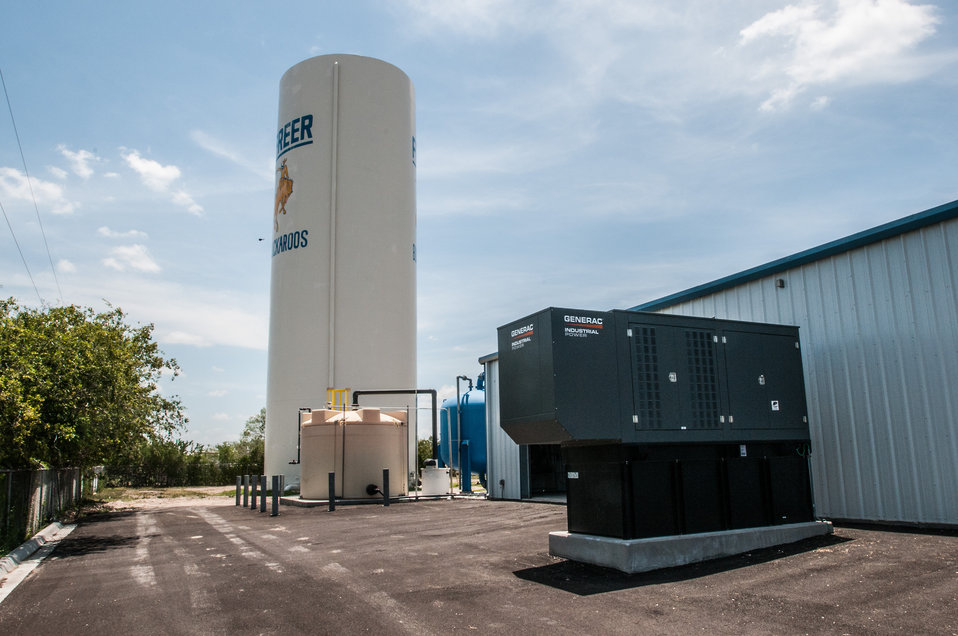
Water holding tank (left-right), hydrogen chloride tank (to balance Ph levels), arsenic removal absorber vessel, and generator, at the Freer Water Control and Improvement District Arsenic Removal System Site, on Tuesday, June 18, 2013, in Freer, Texas.
Although, the naturally occurring arsenic levels have remained constant for more than a century, the Environmental Protection Agency (EPA) safe level standards have established lower levels of arsenic to be safe for human consumption. To meet those levels FWCID approached USDA and was awarded a $986,000 loan for Phase I, to install two new water wells, each rated at 167 gallons per minute (creating a total of eight wells); 13,600 feet of well collection lines; and 15,000 linear feet of well control line to remotely control the well pumps and the 1,000,000 gallon holding tank at the well facility, which supplies water to the new Arsenic Removal System (Phase II). Previously, water was manually controlled by personnel who knew when and how long to manually opened and closed water valves or started well pumps to ensure holding tank levels were within operating levels during peek and slack times of the day. Phase II was a combination of a $1,832,000 loan and a $1,258,750 grant, which provided for the customized arsenic removal system, seen in these photos. The system includes a new 3,530 sp. ft. facility, on a .76-acre site, and houses the operations room, computer and power system, laboratory room, and pump systems. The entire operation can be monitored through a desktop computer interface system. The computer-controlled system ensures raw water is fed to the arsenic removal pump system, which works in sequence to maintain a constant pressure, when needed, to pump water through (blue) arsenic removal absorber vessels, and into ground storage tanks that feeds the residential and commercial needs of the city. Samples of water are periodically tested; and so far the arsenic levels have been below 1 part per billion (PPB), well under the 10 PPB limit.